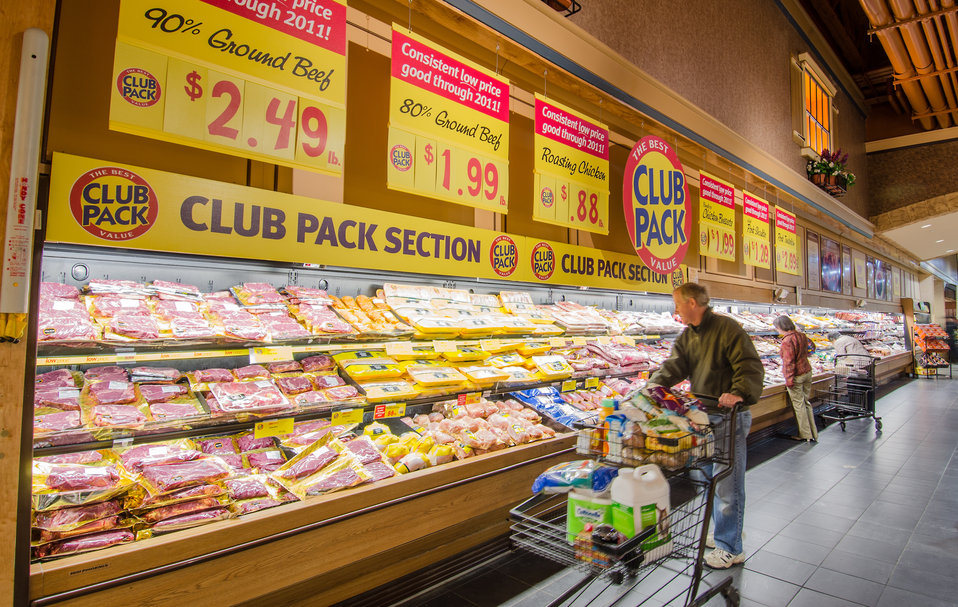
Shoppers at the meat poultry department of a grocery store in Fairfax, Virginia, on March 3, 2011.